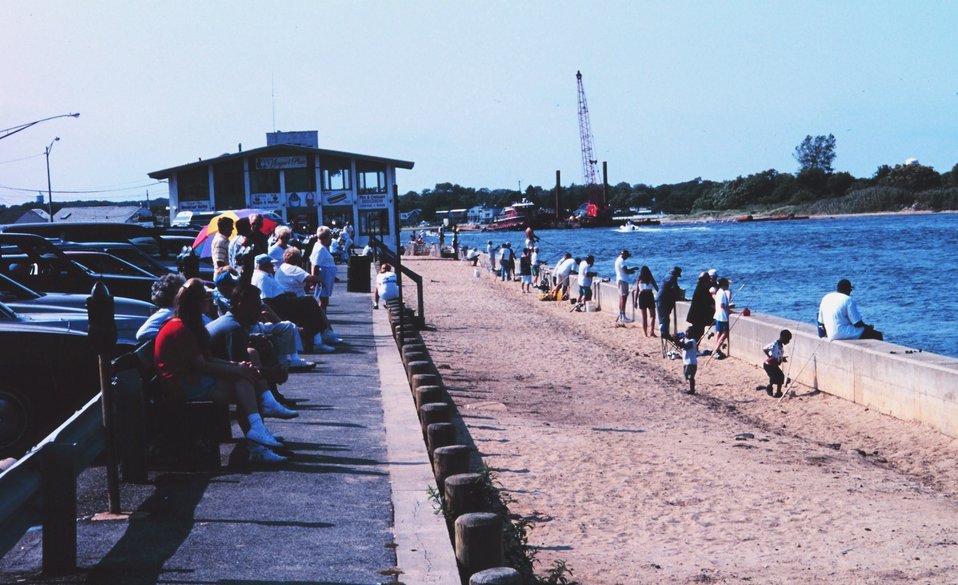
People fishing along Manasquan Inlet